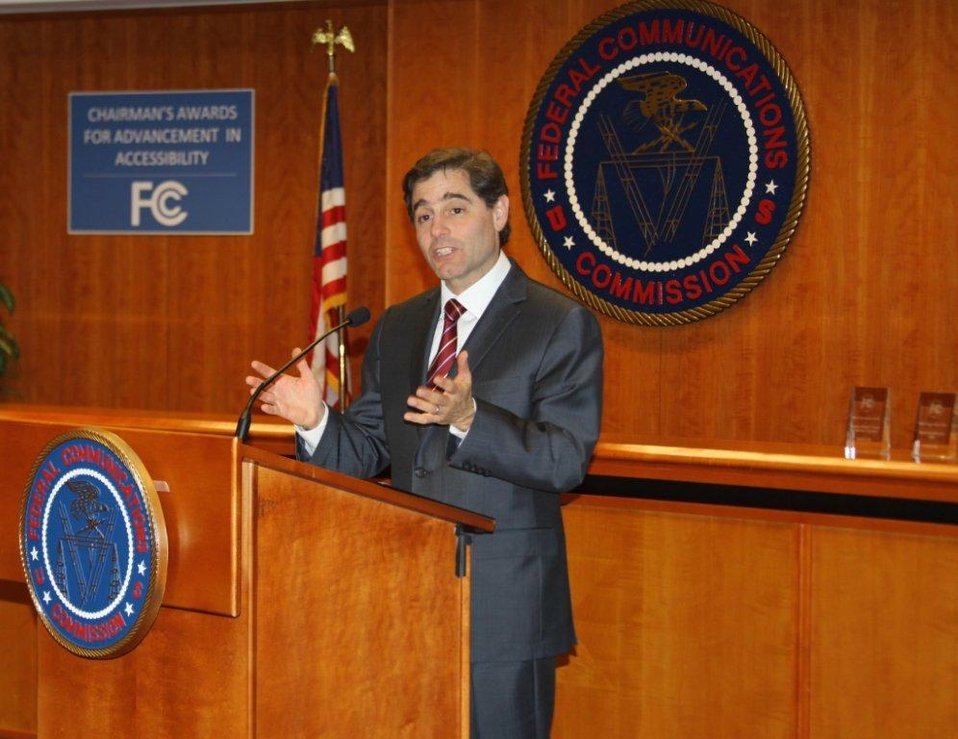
Chairman Genachowski Giving Remarks at the Advancement in Accessibility Awards